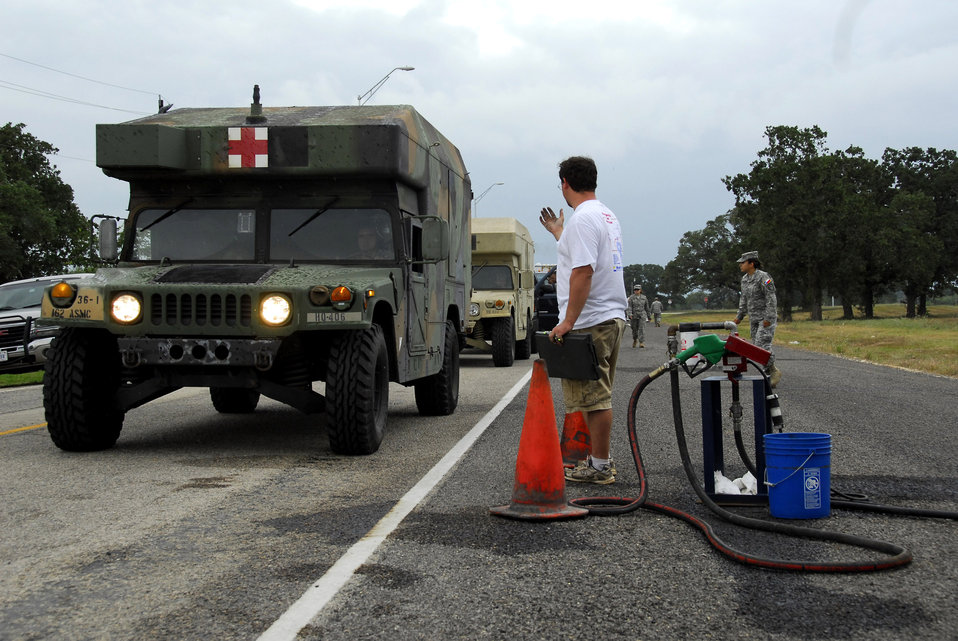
Convoy: Help is on the way!

Military forces and representatives of agencies from throughout Texas and the U.S. gathered in San Antonio and then convoyed east. More than 500 vehicles and 1,000 people headed to various locations in Southeast Texas to begin search and rescue and recovery efforts in the aftermath of Hurricane Ike.